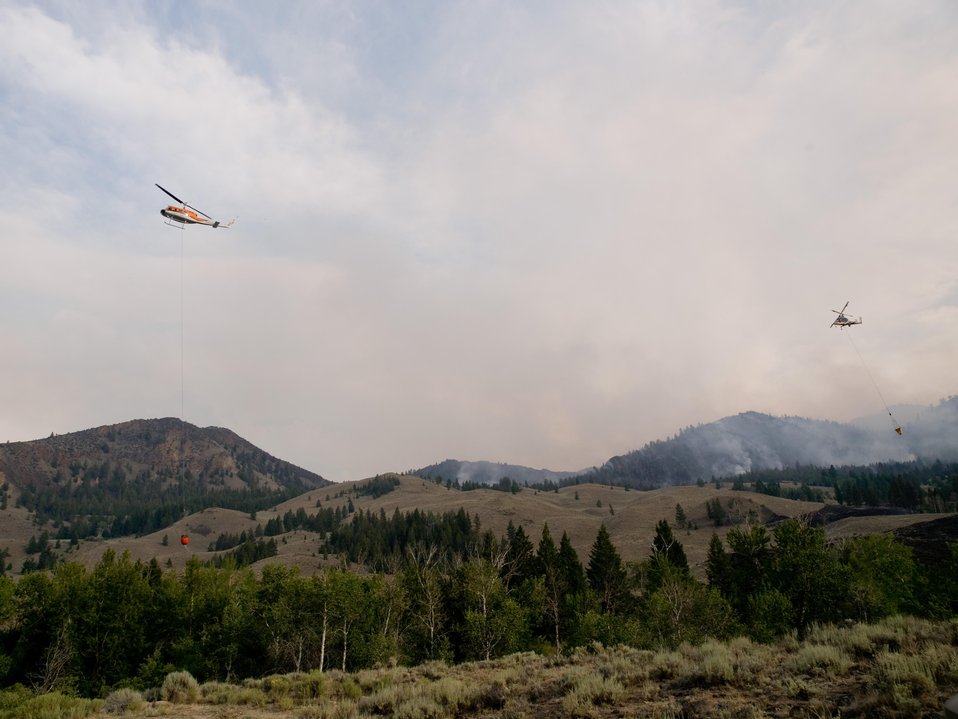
Helicopters make water drops on the Lodgepole Fire. The Lodgepole Fire in the Salmon-Challis National Forest near Challis, ID began on Jul. 20, 2013 by lightning has consumed approximately 13,700 acres and is approximately 15% contained.